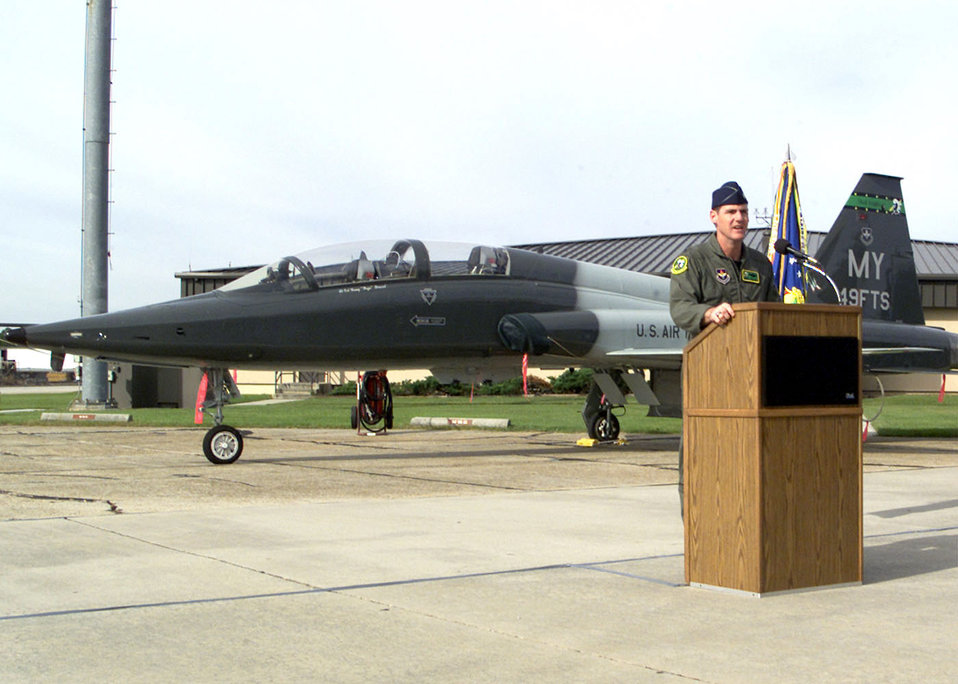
Assumption Of Command

MOODY AIR FORCE BASE, Ga. -- Lt. Col. Kenneth Dressel speaks during a ceremony here Oct. 10, 2000 at which he assumed command of the 49th Flying Training Squadron. The unit moved that day from Columbus Air Force Base, Miss., becoming part of Moody's 479th Flying Training Group. The FTG reactivated at Moody to operate a pilot training mission. The 49th FTS will teach pilots the Introduction to Fighter Fundamentals course.